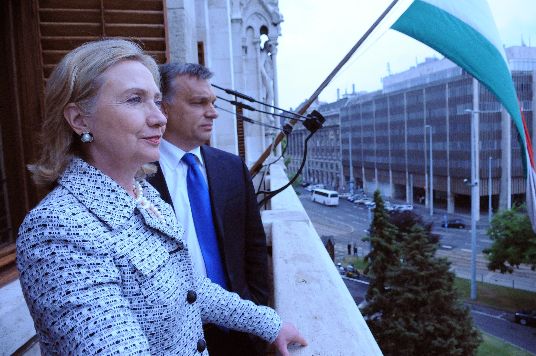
Secretary Clinton and Hungrarian Prime Minister Orbán Talk on a Balcony at the Hungarian Parliament

U.S. Secretary of State Hillary Rodham Clinton and Hungarian Prime Minister Viktor Orbán talk on a balcony at the Hungarian Parliament in Budapest, Hungary, June 30, 2011.